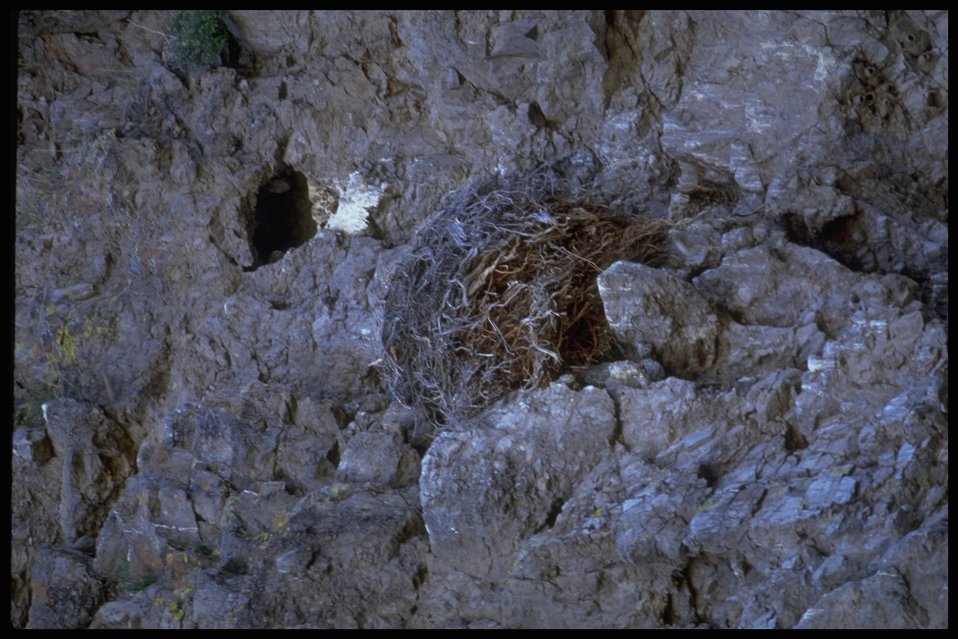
Golden Eagle nest, Lakeview District.